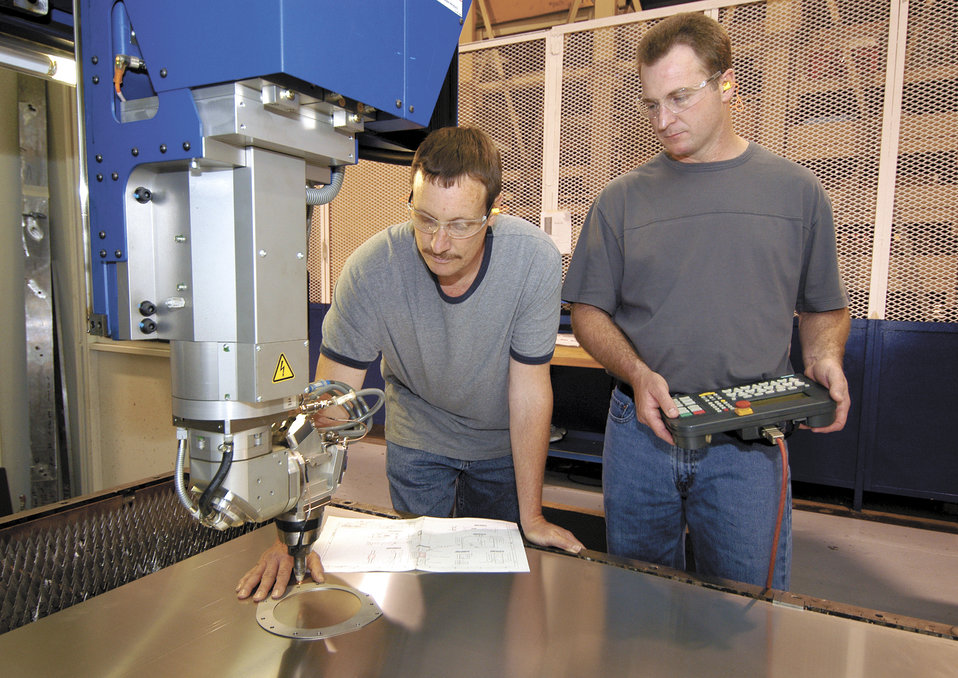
State-of-the-art carbon dioxide laser speeds up production

TINKER AIR FORCE BASE, Okla. -- Ricky Harris (left) and Paul Spurlock can program the carbon dioxide laser to precisely carve small or large engine parts quieter, cleaner and safer than many other methods. They are machinists with the computer numerical control shop here.